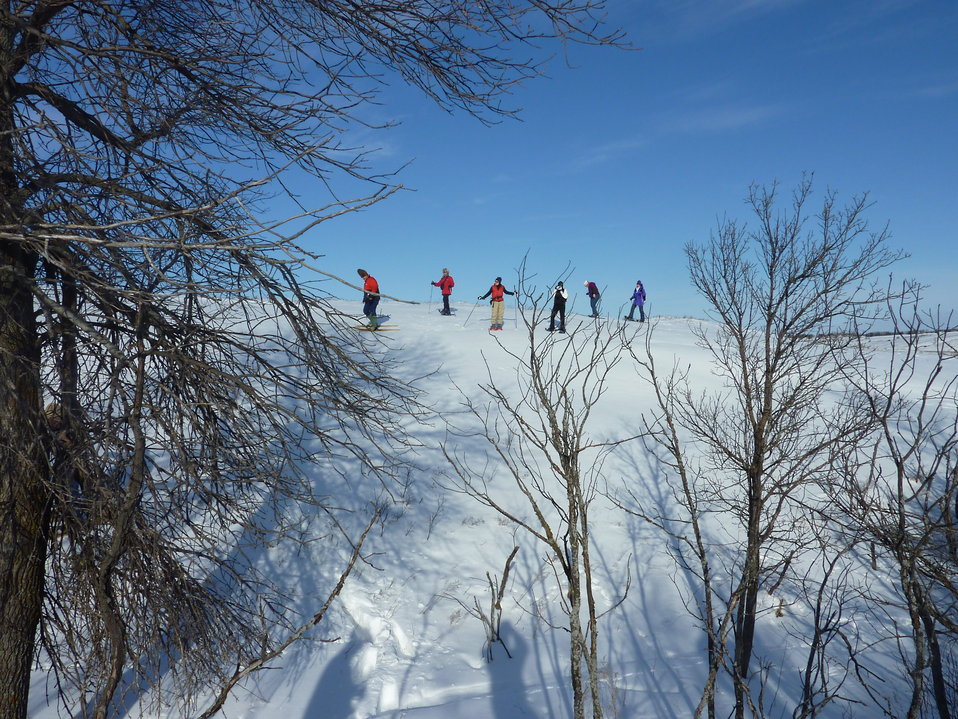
Snowshoers in Des Lacs NWR

Snowshoers hiked through many different types of terrain on Saturday - through wooded coulees where they saw signs of deer and up an down the slopes of the Des Lacs River Valley.